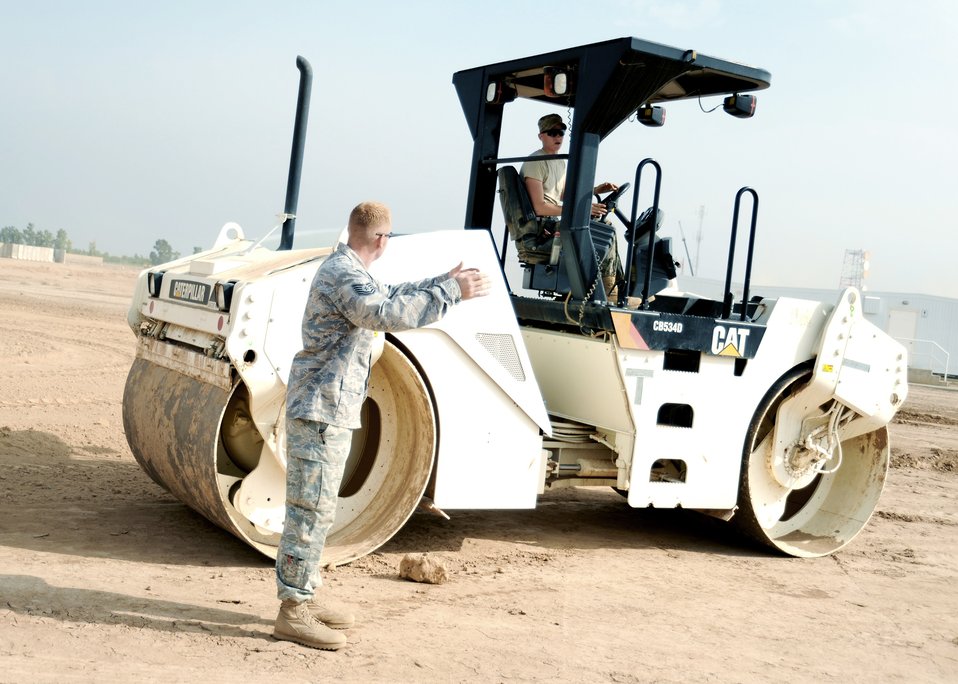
Airmen build up reconstruction yard for drawdown

JOINT BASE BALAD, Iraq -- Tech. Sgt. Orlin Rohde, 732nd Expeditionary Civil Engineer Squadron heavy equipment operator and project manager, directs Airman Marshall Hess as he drives a vibratory roller to prepare the grounds for a new container repair yard Nov. 2, 2009. By using containers repaired here instead of purchasing new ones, the projected savings total more than $100 million as military assets withdraw from Iraq.